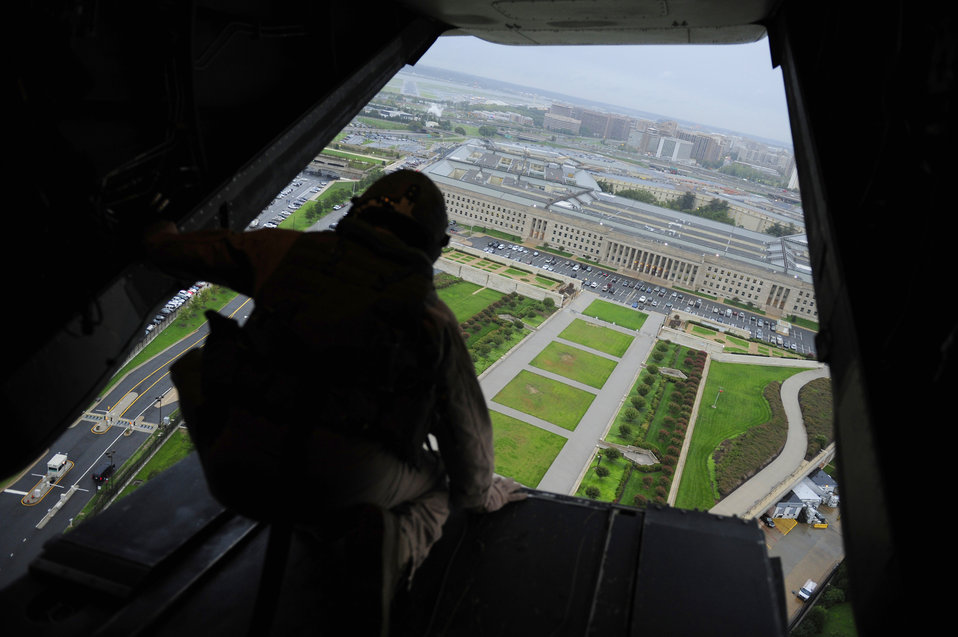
Above the Pentagon

The Pentagon is visible from a V-22 Osprey carrying Secretary of Defense Leon Panetta Sept. 6, 2011. Panetta traveled to New York City to visit the 9/11 memorial site with Mayor Michael Bloomberg.